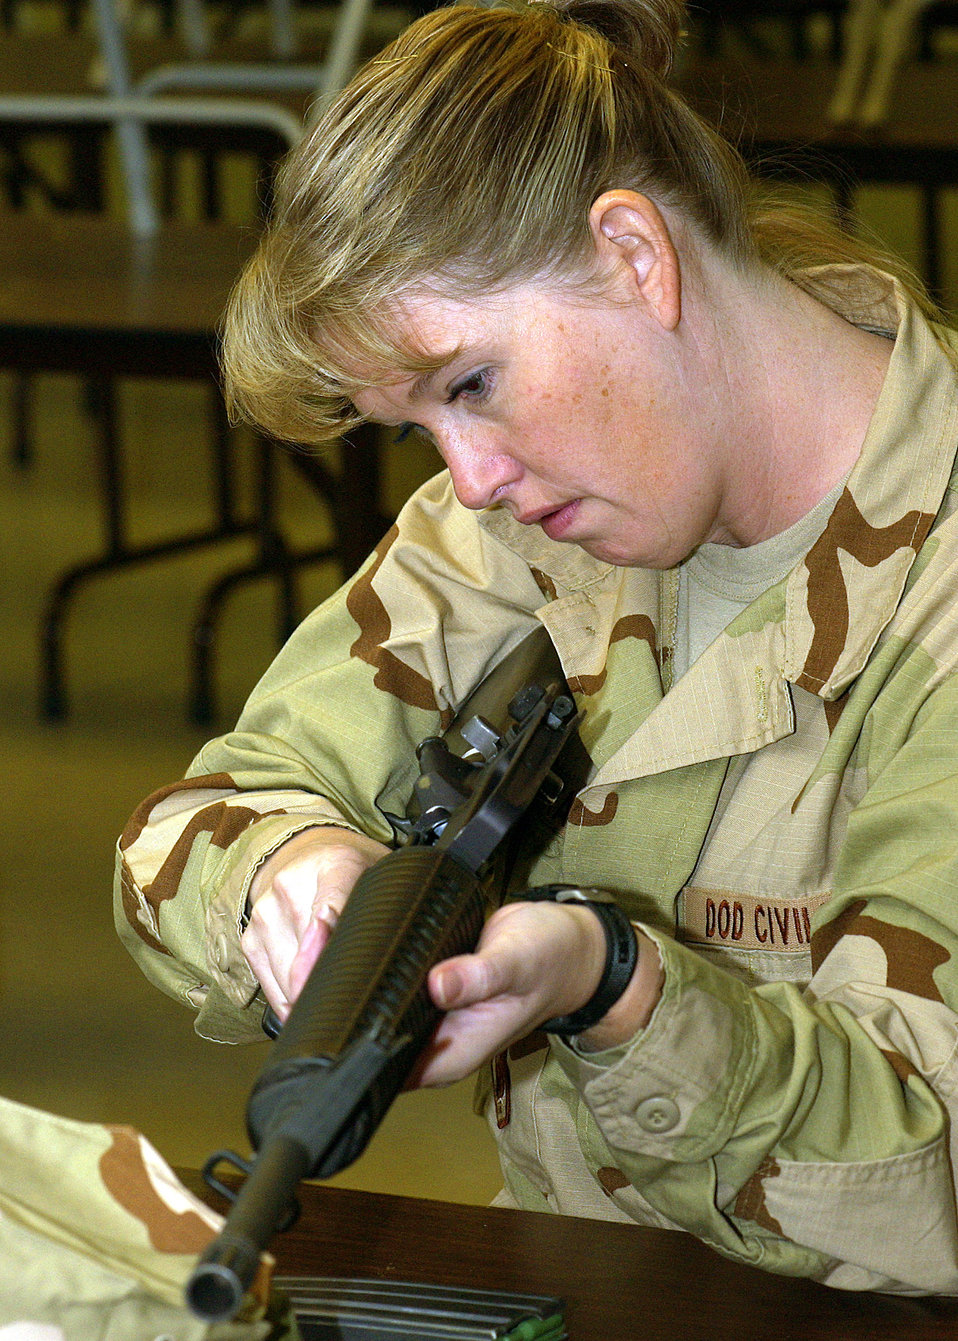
Deploying civilian

Michele Kantak clears her weapon Dec. 28 while training for her upcoming 120-day deployment to Southwest Asia as a base-level planner. Mrs. Kantak is a civilian assigned to Air Force Space Command's Logistics and Warfighting Integration Directorate at Peterson Air Force Base, Colo.. She stepped up to fill a base-level planner position for the Air Force in support of the war on terrorism.